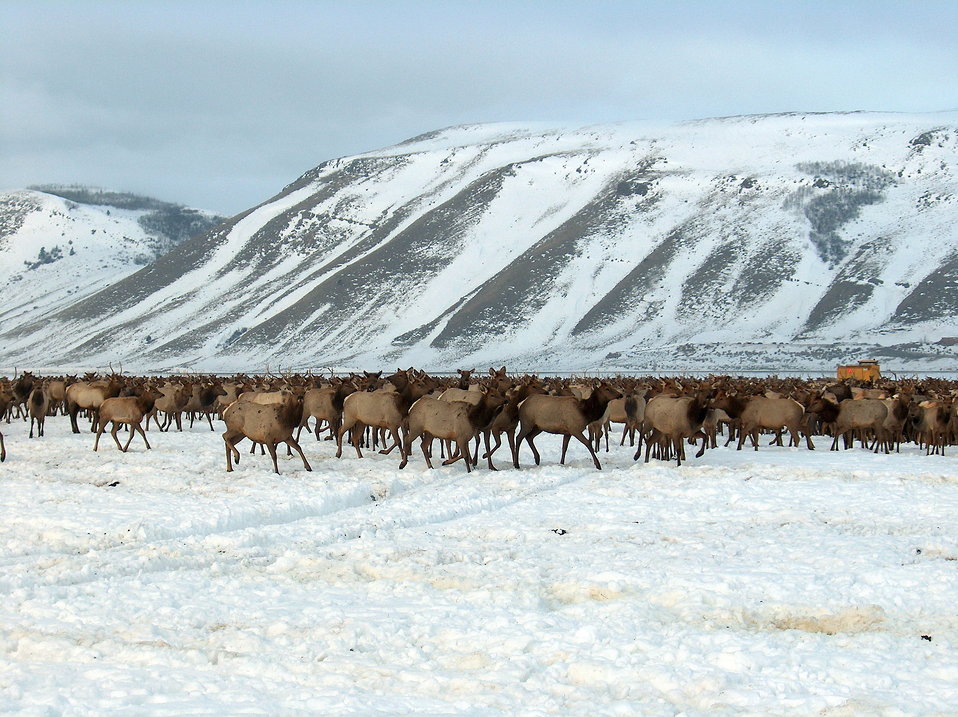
Elk at National Elk Refuge

Elk on one of the feedgrounds at the National Elk Refuge in Montana. The Wildlife Health Office is currently conducting a multi-year study investigating the relationship between winter feeding and elk health at the refuge.